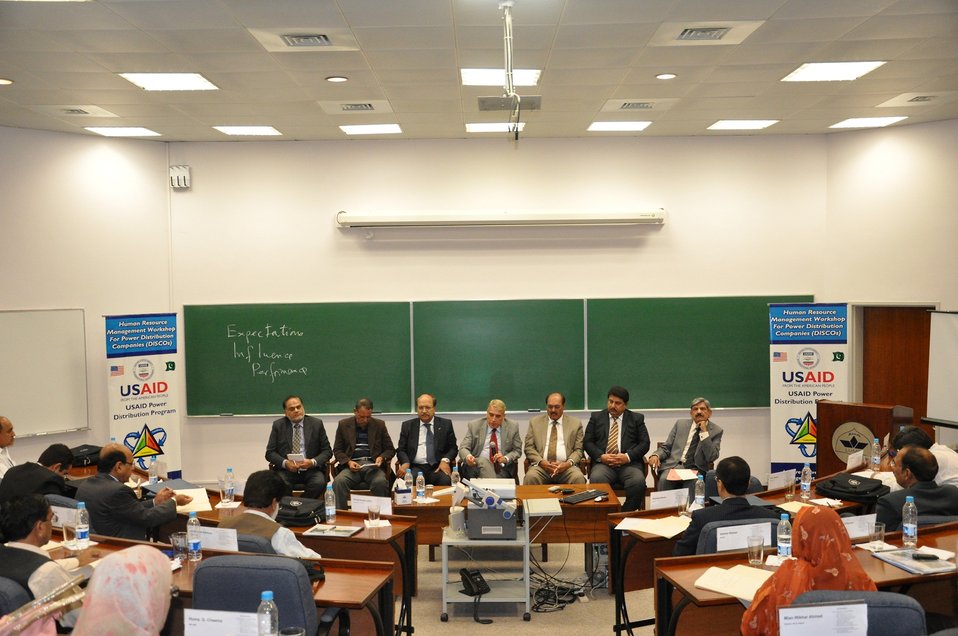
Human Resource Workshop at Lahore University of Management Sciences (LUMS)

Monday, March 19-20, 2012: Chief A high-level workshop for the senior human resource management of DISCOs was organized by the USAID Power Distribution Program and was designed by the senior faculty members of LUMS.